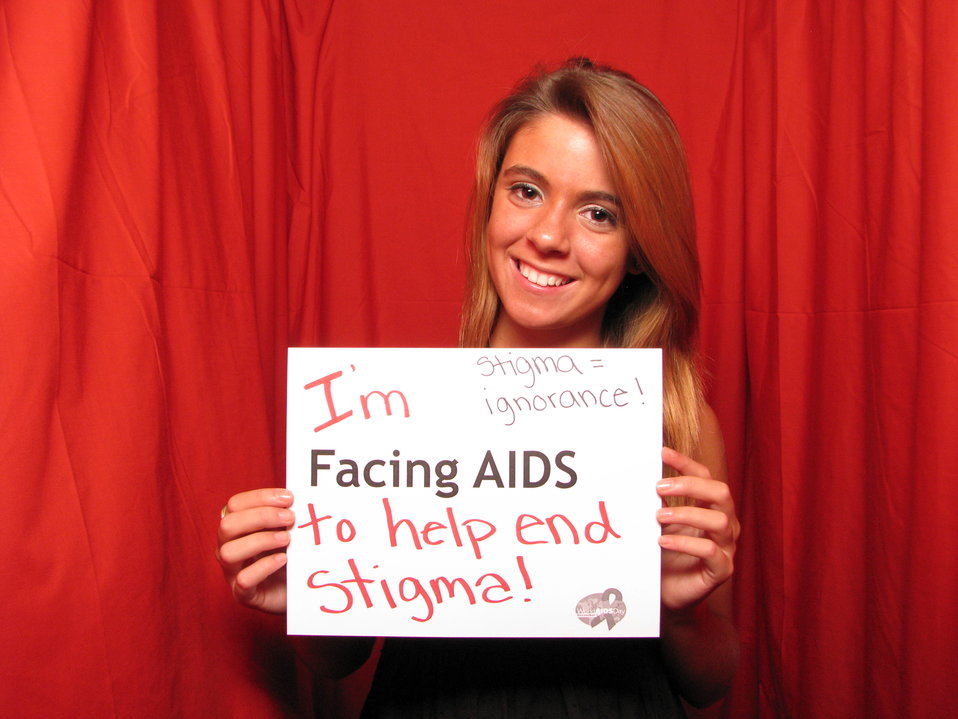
I'm FACING AIDS to help end stigma! Stigma= ignorance!

From the AIDS.gov photo booth at the U.S. Conference on AIDS, September 2010 (Orlando, FL).